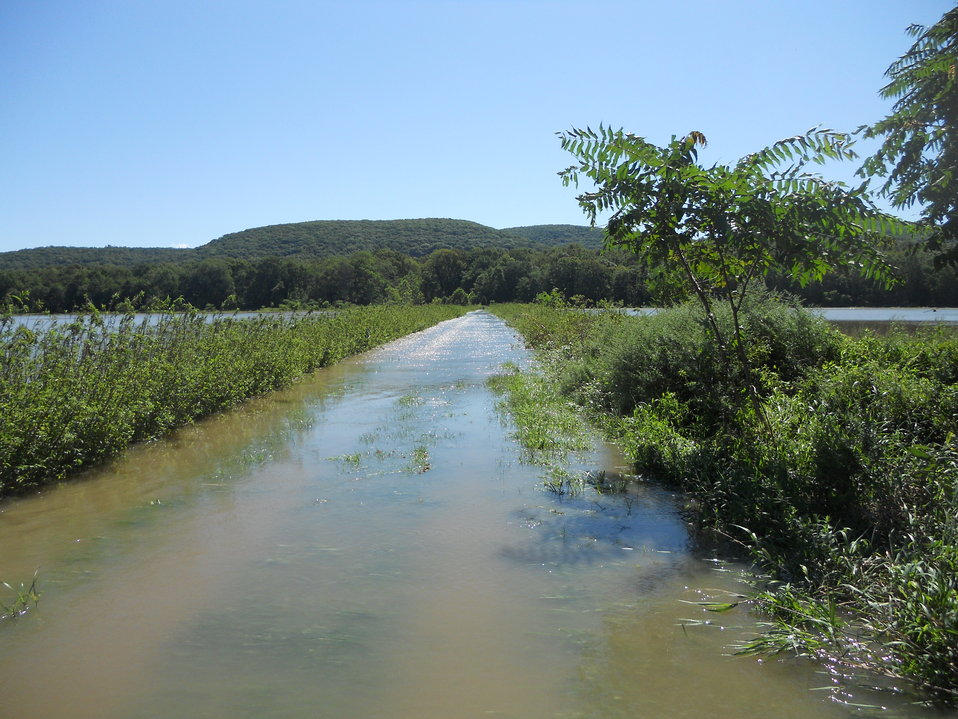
Flooding at WallKill River Refuge

Wallkill River National Wildlife Refuge, Sussex, N.J. Post-Irene flooded Liberty Loop impoundments and trail. Meagan Racey/USFWS